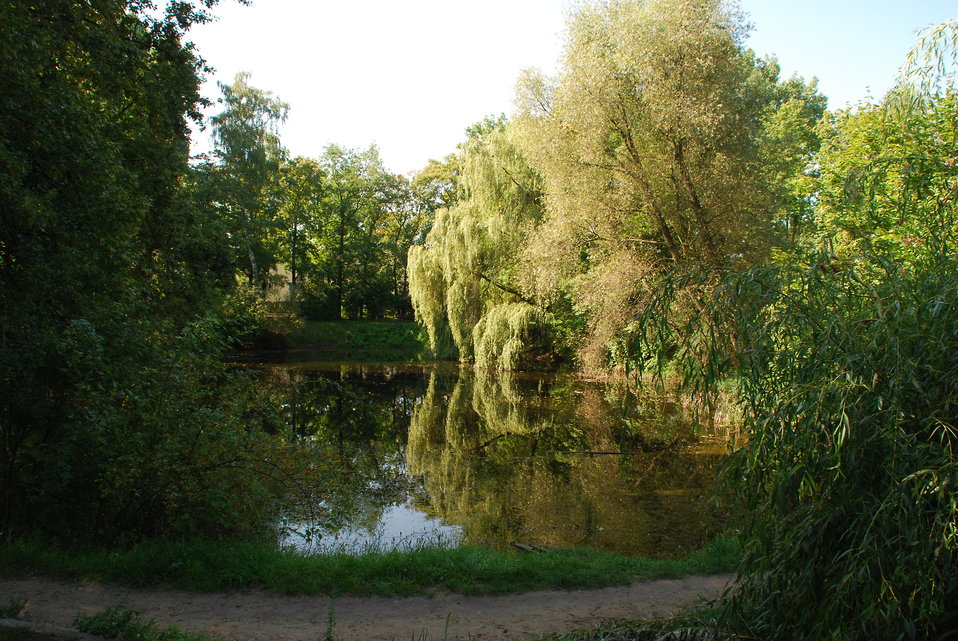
Theaterteich in Frankfurt (Oder), am ehemaligen Kleist-Theater, Friedrich-Ebert-Straße